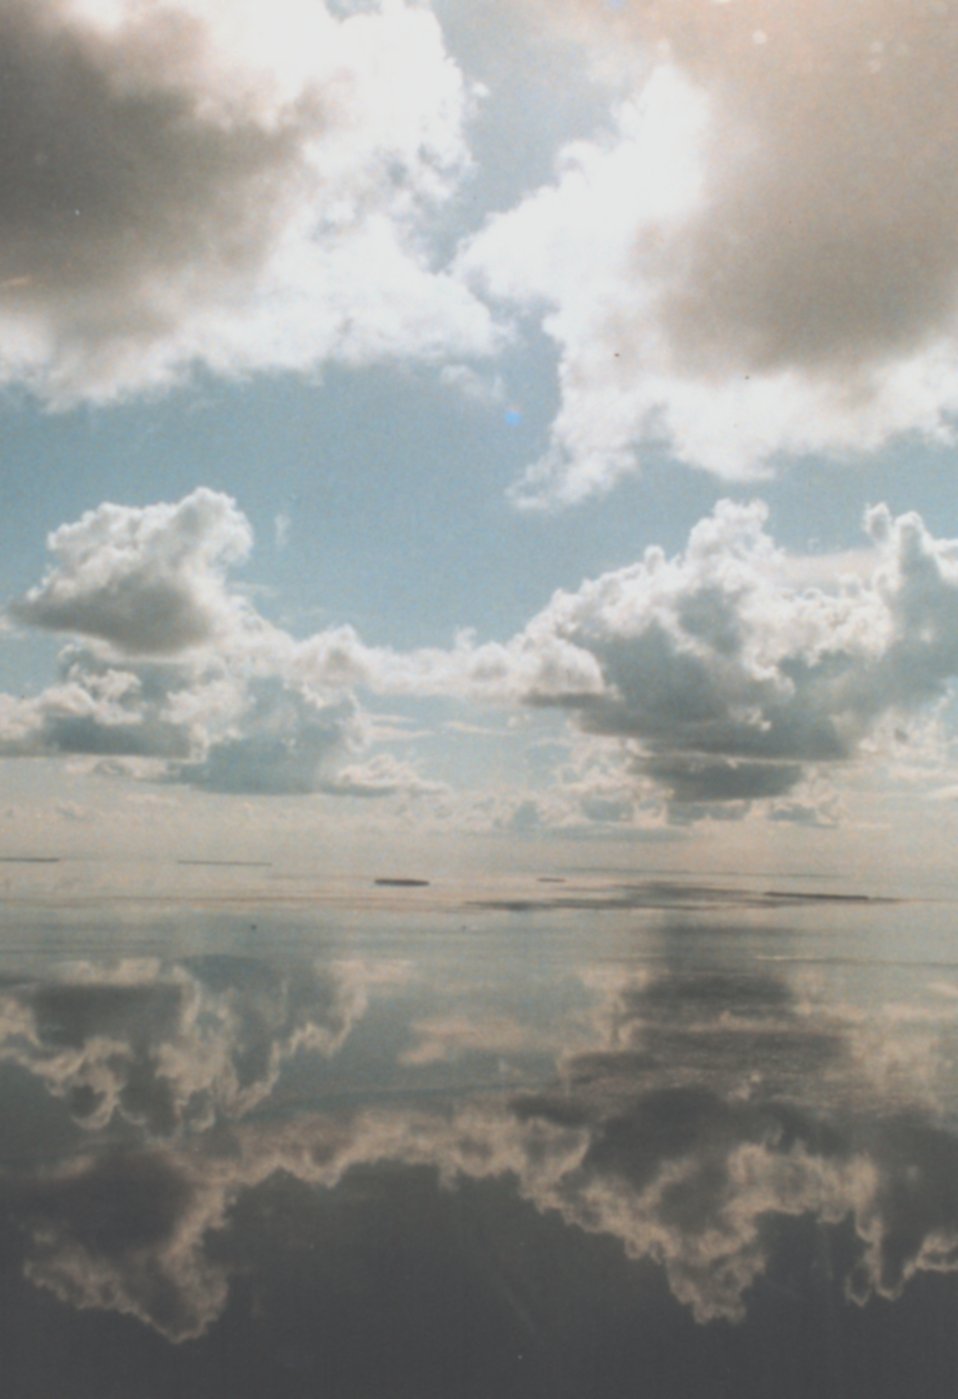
Which way is up? A mirror-smooth sea reflects cumulus clouds on a still morning in the Keys.